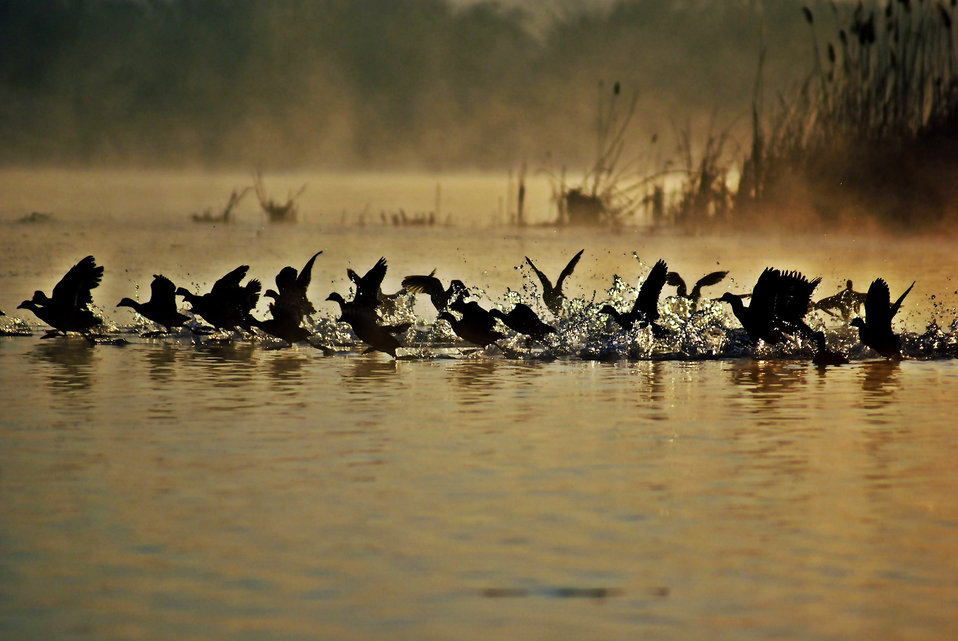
Birds taking off

Coot running.